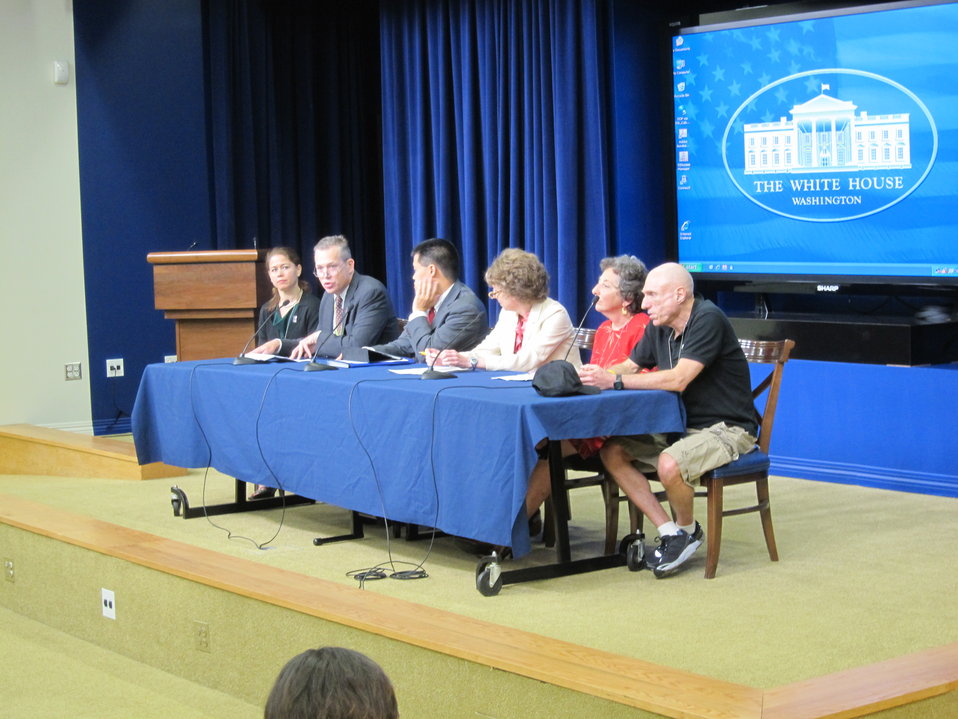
WH 2012 World Hepatitis Day Event